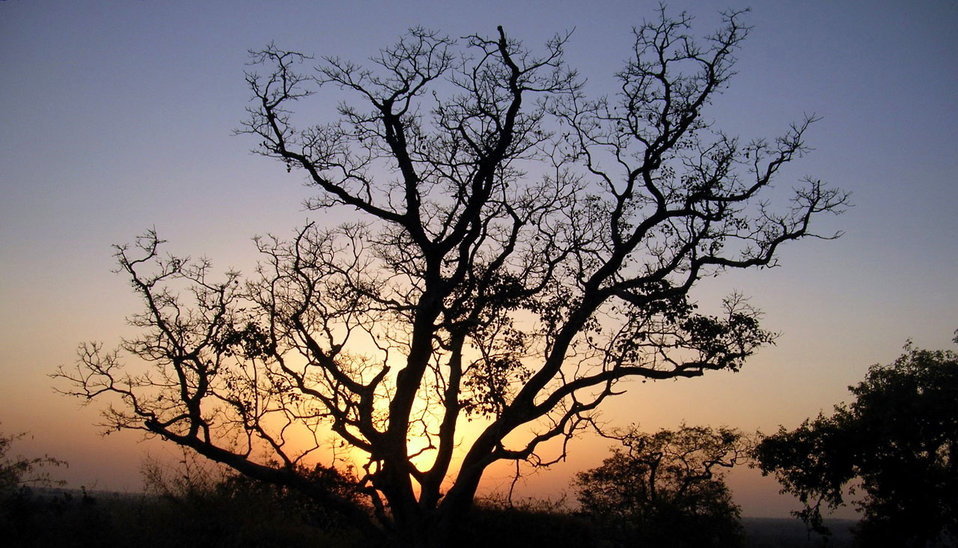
The tree at dusk.